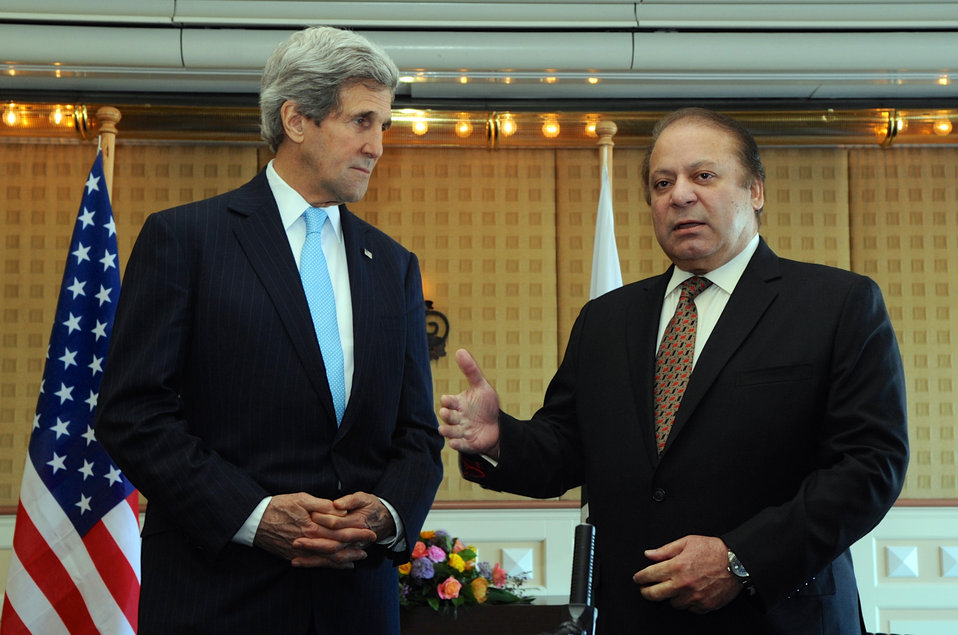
Pakistani Prime Minister Sharif Addresses Reporters Before Meeting With U.S. Secretary of State John Kerry at The Hague

Pakistani Prime Minister Nawaz Sharif addresses reporters before beginning a bilateral meeting with U.S. Secretary of State John Kerry on the margins of the Nuclear Security Summit at The Hague, the Netherlands, on March 24, 2014.